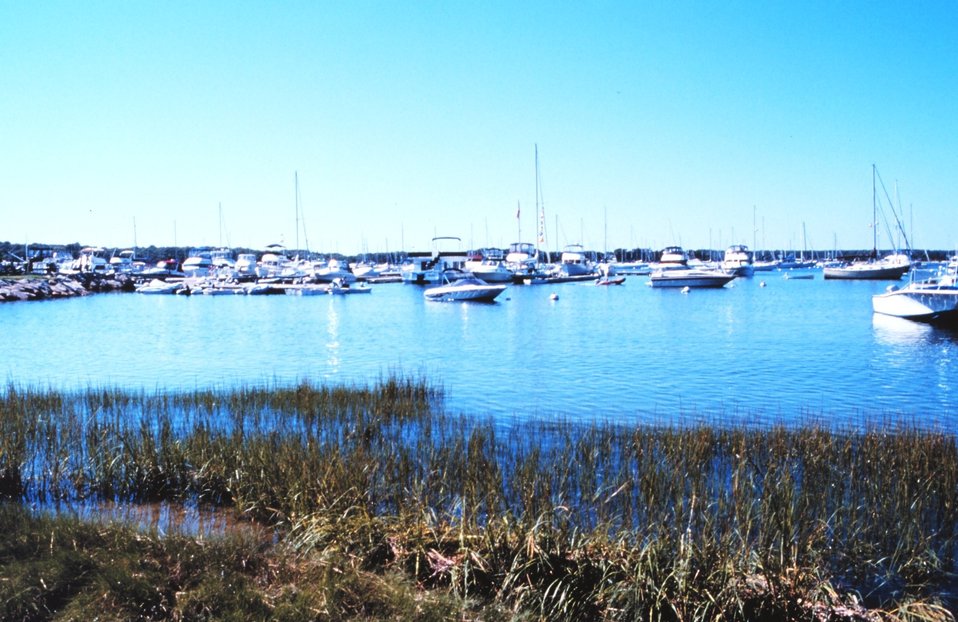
Red Brook Harbor Bourne